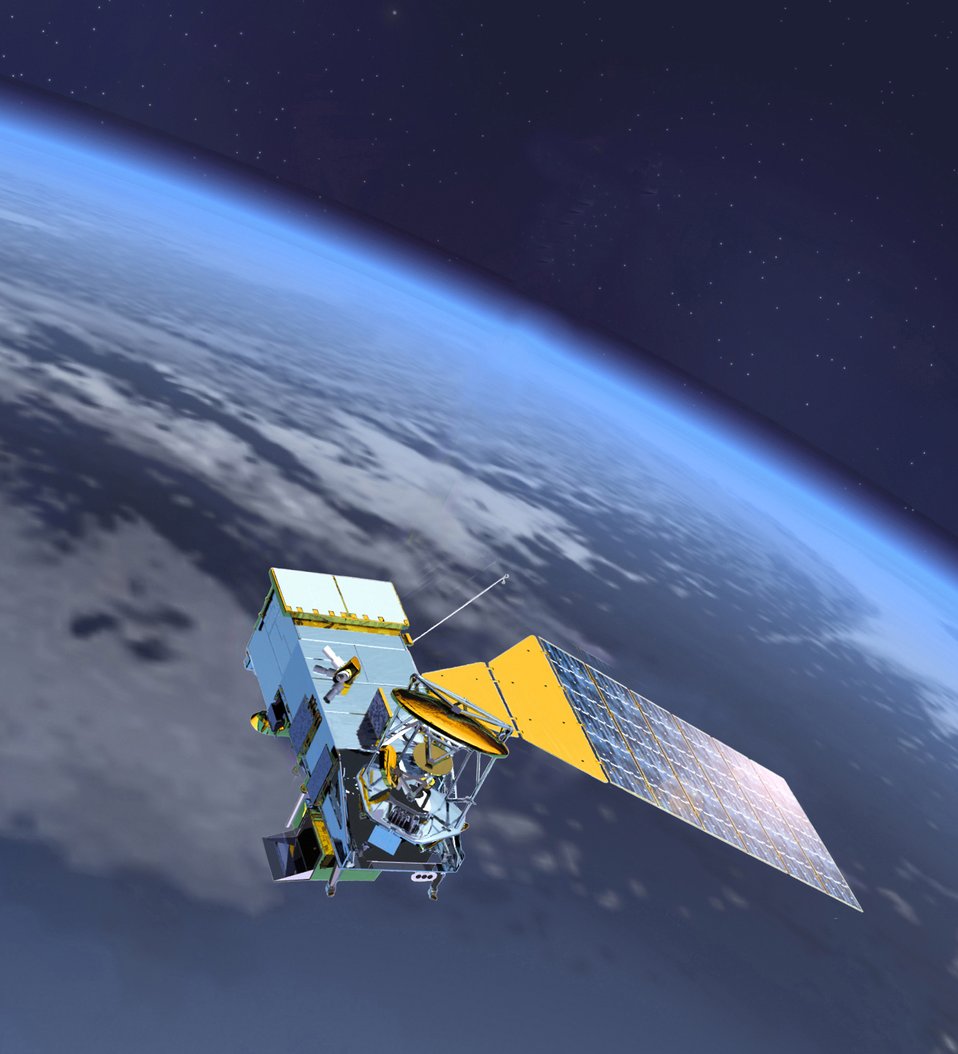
Latest revision signed to space operations doctrine

The Air Force chief of staff has approved the latest revision to Air Force Doctrine Document 2-2, Space Operations, outlining the operations of space power.